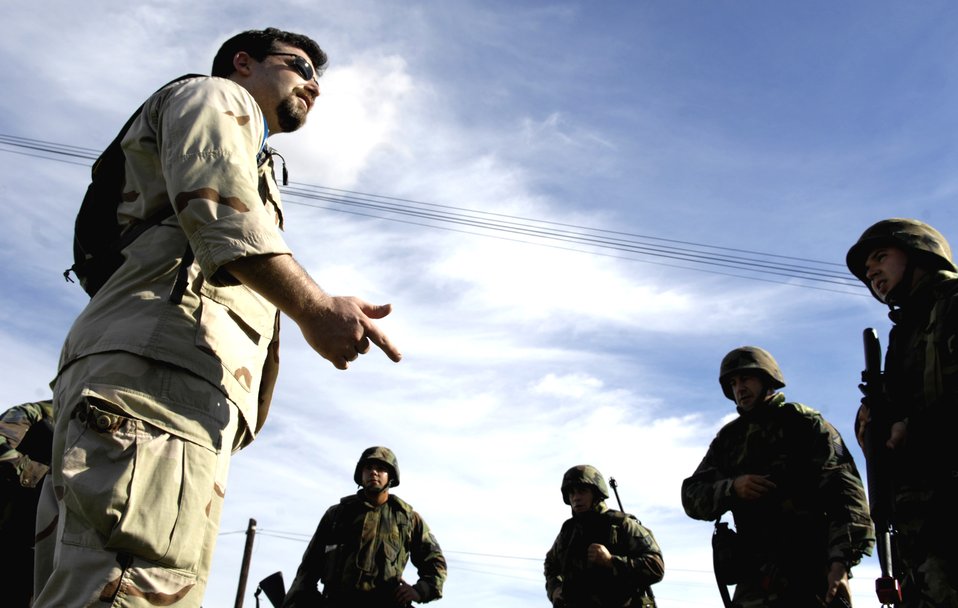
Combat course prepares Airmen for AEF

Instructor Adam Smith talks with students from the 15th Airlift Wing Nov. 3 after a training session of individual movement techniques during a 3-day Expeditionary Combat Skills training course at Hickam Air Force Base, Hawaii. The Airmen are preparing for the Air Expeditionary Force 5/6 cycle.